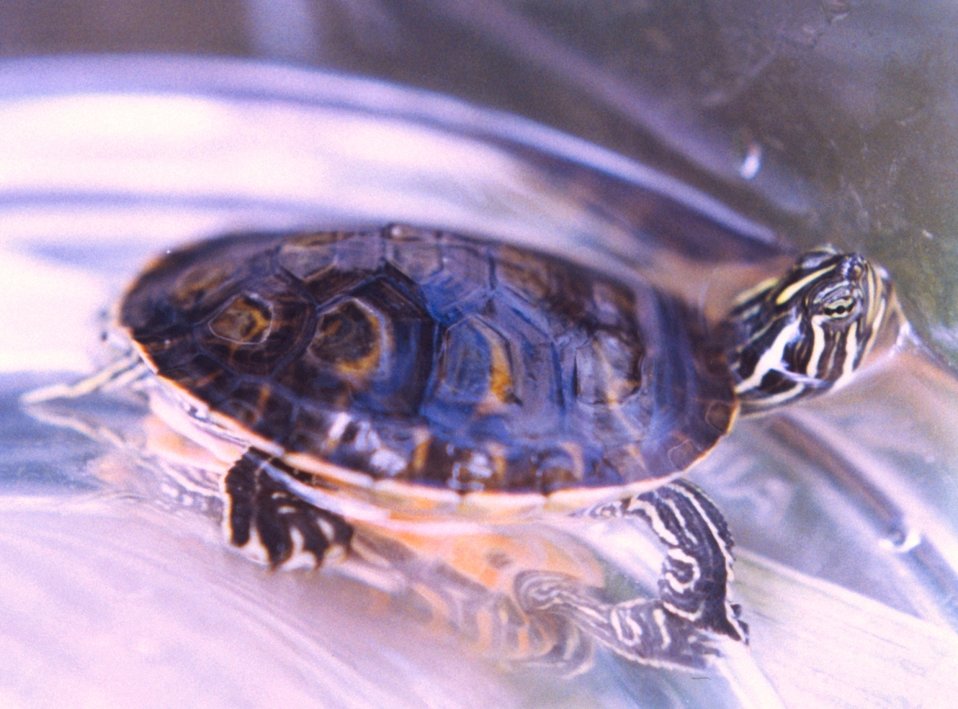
A young Redbelly Slider turtle (Pseudemys rubriventris rubriventris.)